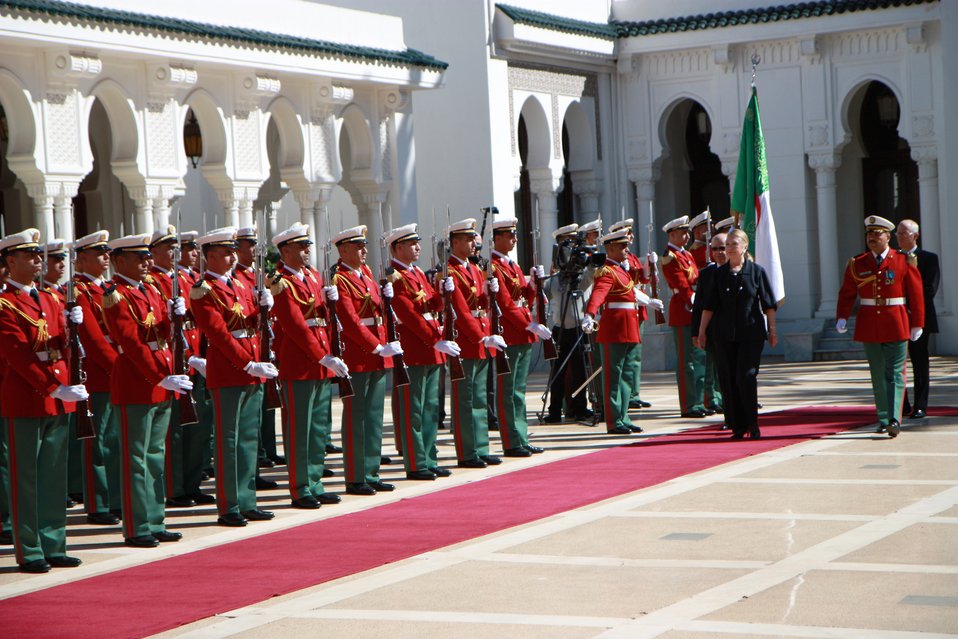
Secretary Clinton Prepares To Meet With Algerian President Bouteflika

U.S. Secretary of State Hillary Rodham Clinton prepares to meet with Algerian President Abdelaziz Bouteflika in Algiers, Algeria, October 29, 2012.